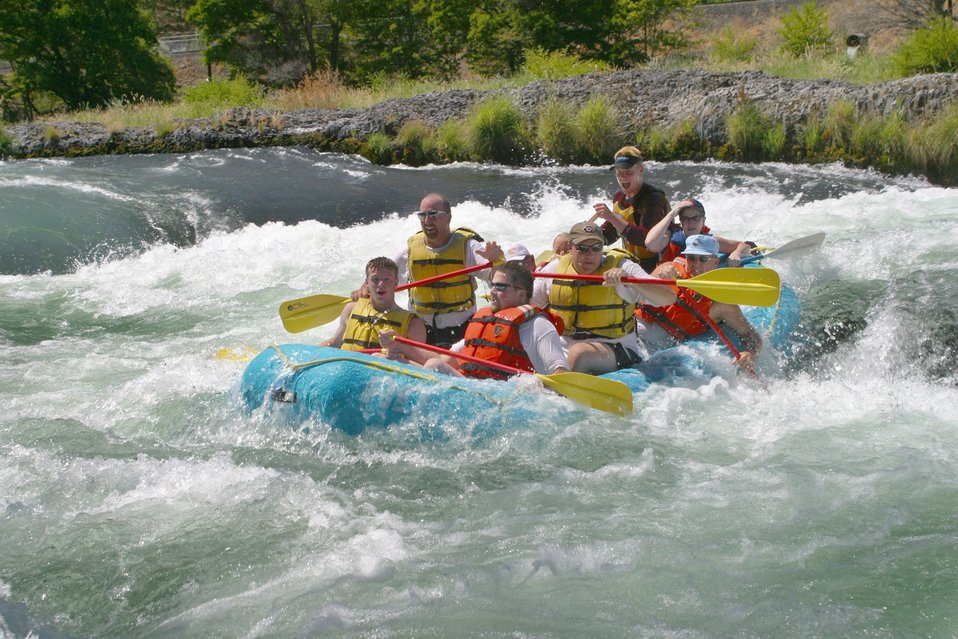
Oak Springs is a Class IV Rapids. The left channel has shallow rocks, large standing waves, turbulent currents and a large hole during high flows. The right channel has a large hole, shallow rocks, and turbulent currents. 7/26/03 Pelton Dam 3600 cfs: Moody Rapids 4300 cfs.